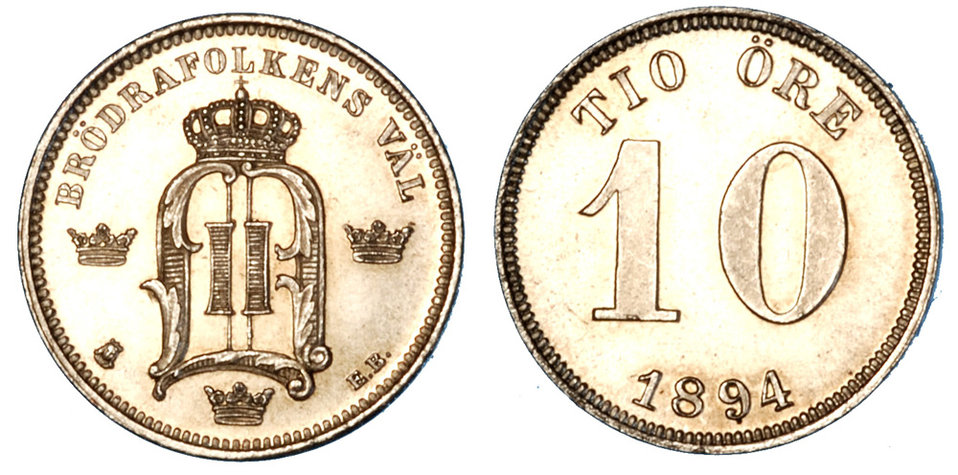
10 öre 1894